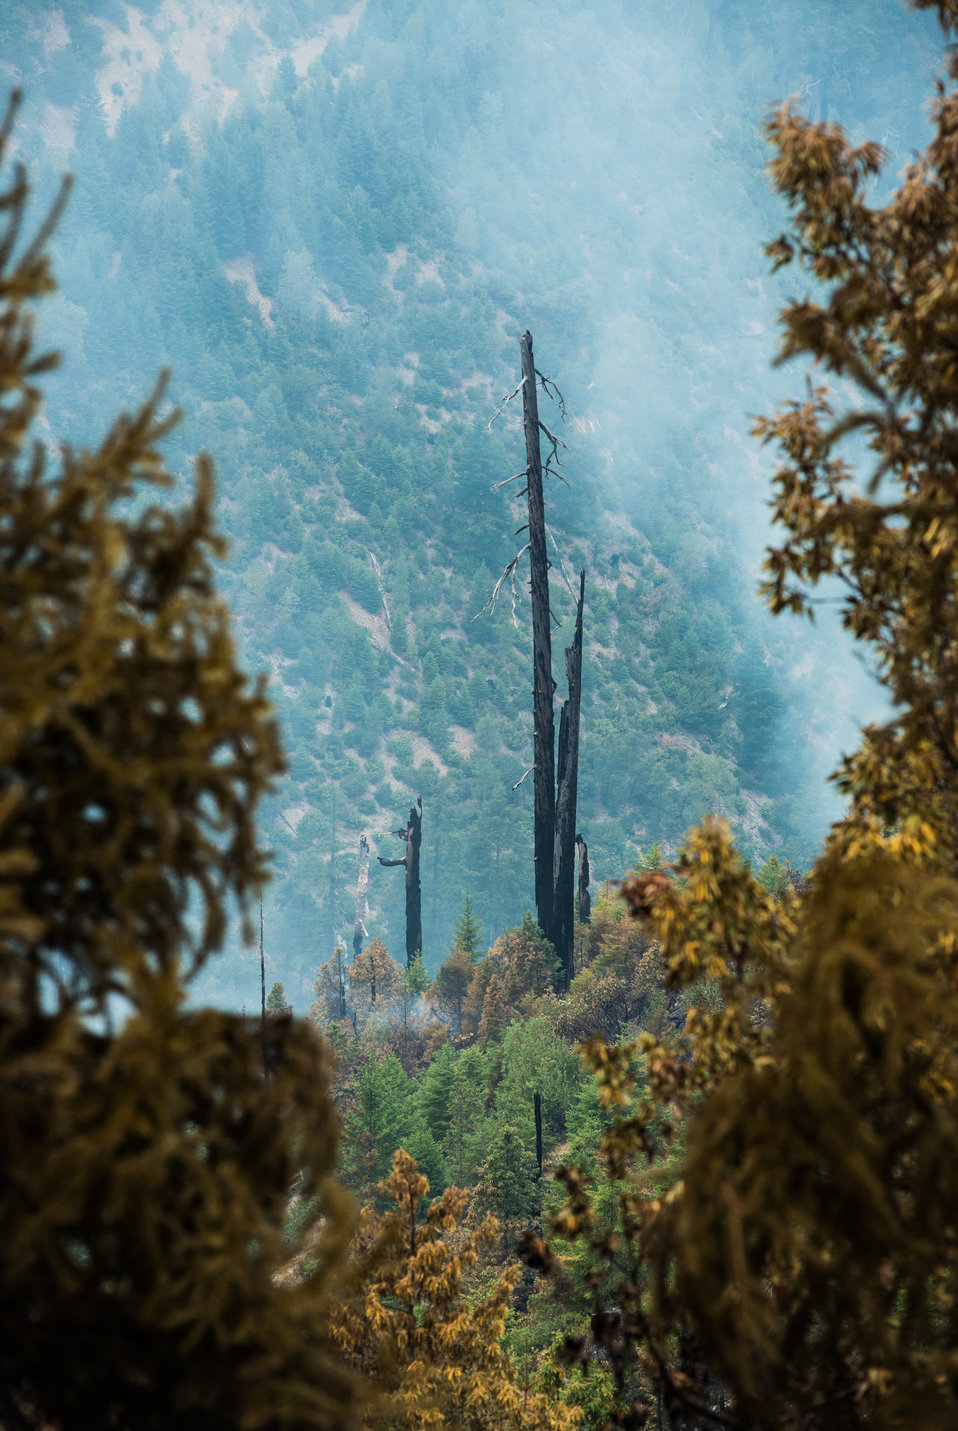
Big Windy Complex Wildlands Fire, 15 miles west of Interstate-5 and East Northeast of Galice, Oregon, with the Incident Command Post (ICP) in Merlin, OR on Friday, Aug 9, 2013.